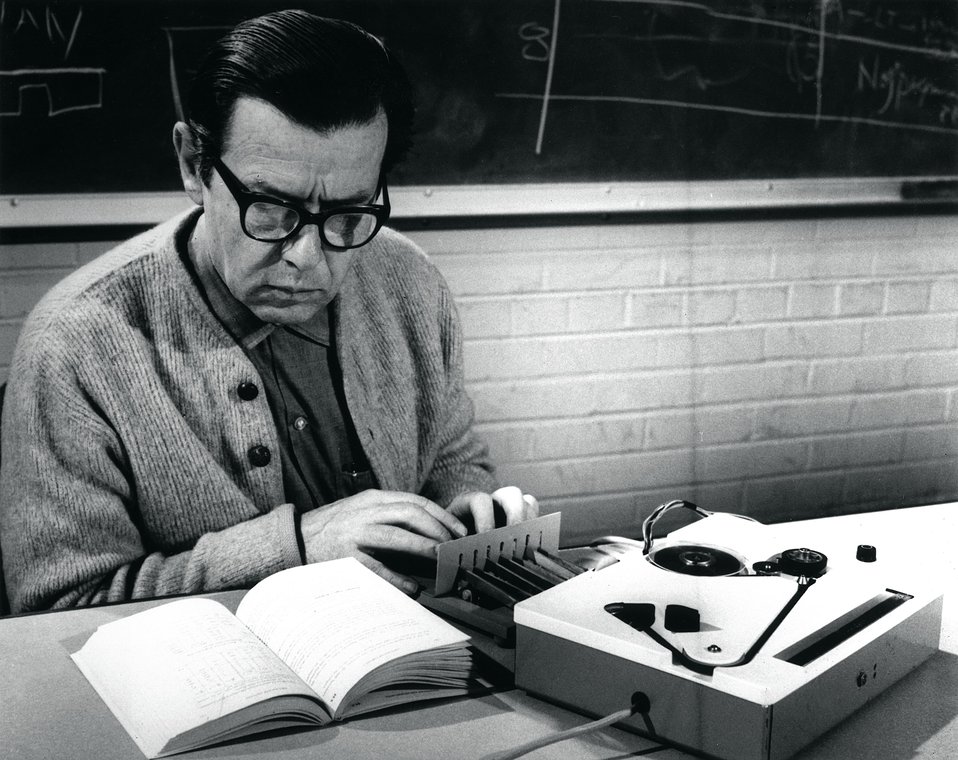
The 'Argonne Braille Machine' can be used to transcribe material directly onto 1/4 inch tape. The tape can be replayed to form braille characters.
c.1970